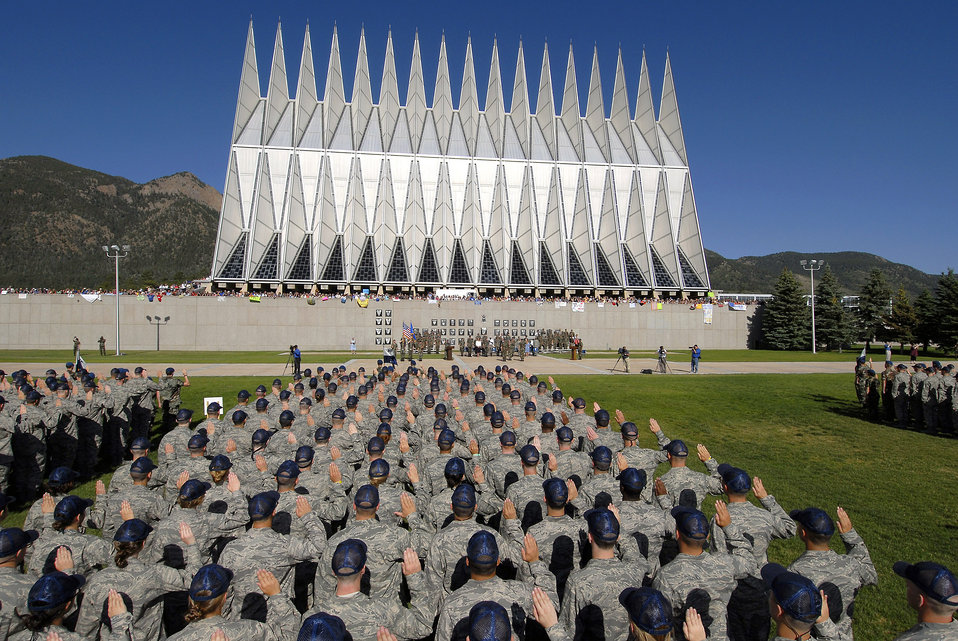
Leaders encourage Airmen to apply for Academy

The 1,346 basic cadet trainees of the Class of 2012 are sworn in June 27 at the U.S. Air Force Academy in Colorado. Out of the 1,300 slots in the next class of cadets, the Academy has set aside 85 slots for qualified active-duty personnel, and another 85 slots for qualified Guard and Reserve members. Deadline for application is Jan. 31, 2009 and details are available at www.academyadmissions.com or from the base education office.